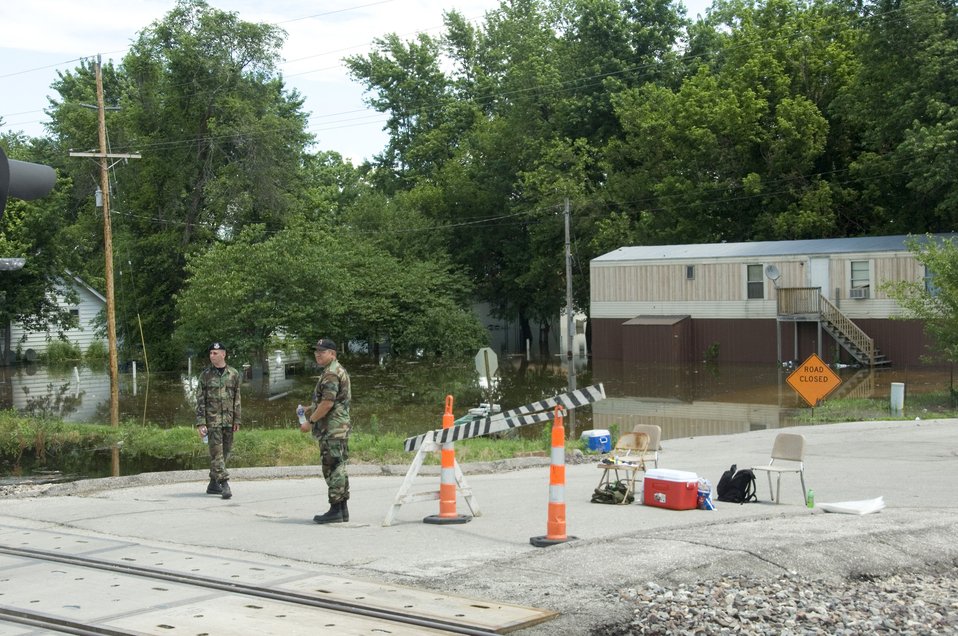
National Guards protect checkpoints

Master Sgt. Chris Montoga, right, and Airman First Class Jon Taggart man a checkpoint in Foley, Mo., June 20. Checkpoints manned by members of the Missouri Air National Guard are set up along a 30-mile stretch of the Mississippi River near Winfield, Mo. Air National guardsmen control access to flooded areas provide a deterrent to would-be looters. Sergeant Montoga and Airman Taggart are both from the 131st Fighter Wing at Lambert Field, Mo.